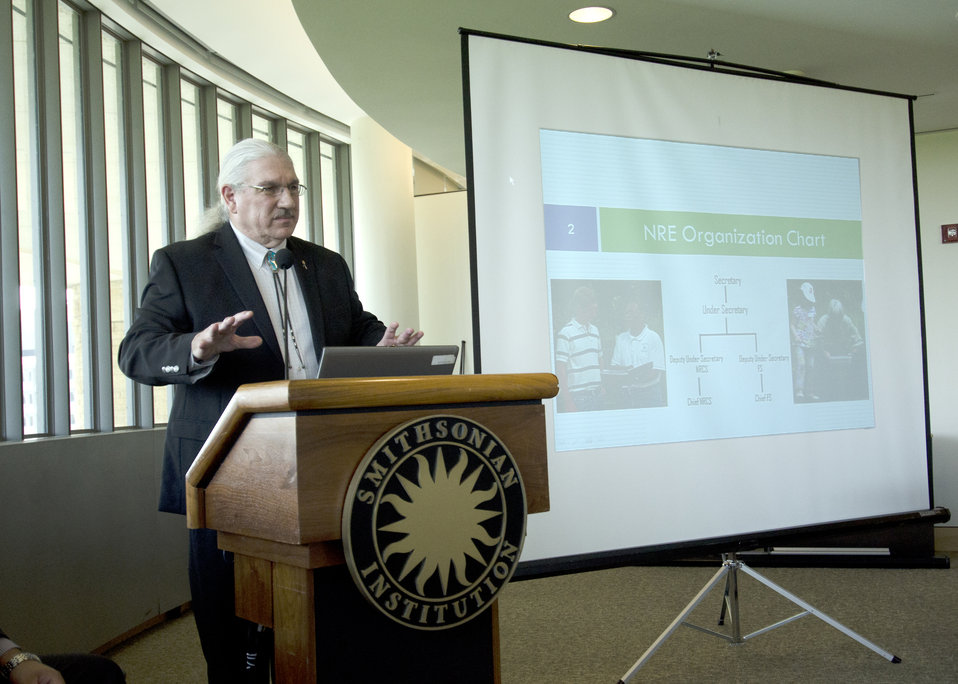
U.S. Department of Agriculture (USDA) Deputy Under Secretary Natural Resources and Environment (NRE) Arthur “Butch” Blazer speaks at the conclusion of the first business meeting of USDA’s Council for Native American Farming and Ranching (CNAFR) held at the National Museum of the American Indian in Washington, D.C., on Wednesday, Aug. 15, 2012. CNAFR was created to advise the Secretary on ways to eliminate barriers to participation for Native American Farmers and Ranchers in USDA programs. The Council was established as part of the Keepseagle settlement, and is conducted under the oversight of USDA's Office of Tribal Relations under the Office of the Secretary of Agriculture.